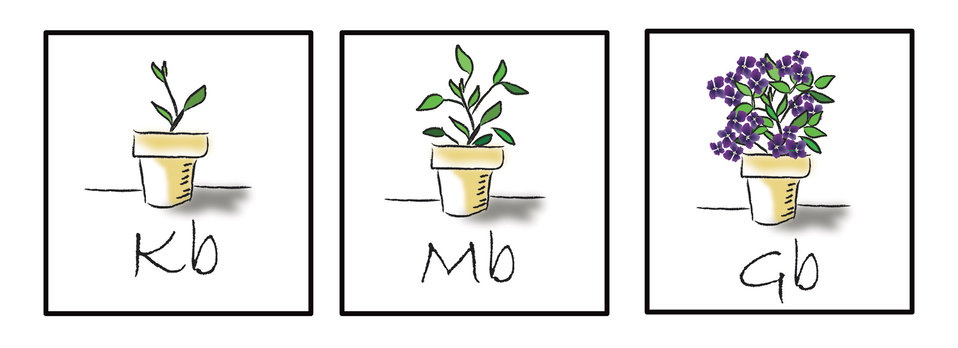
It drawing

It plant illustration.